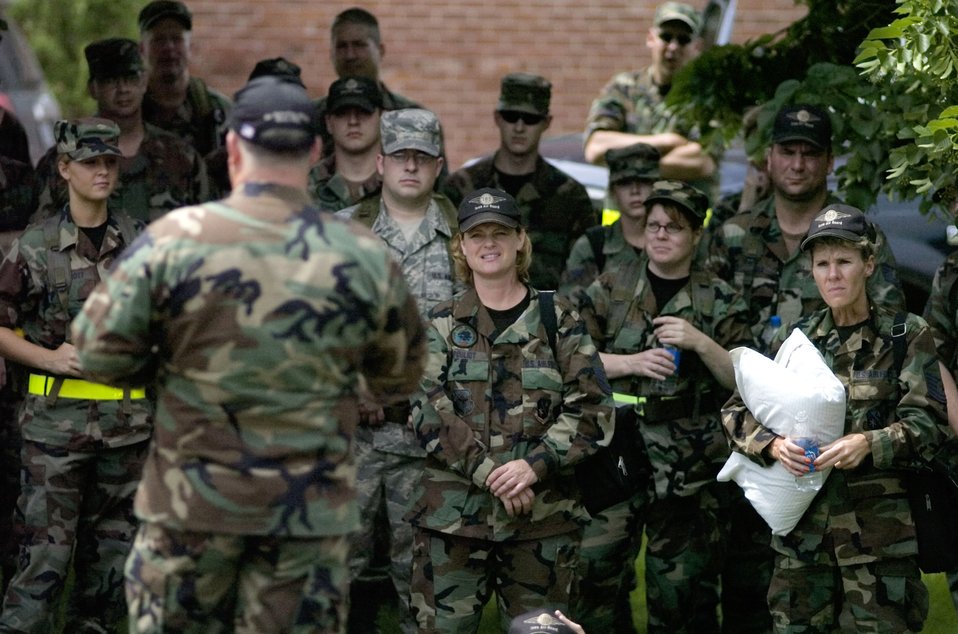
Air National Guard shores up as flood recedes

Lt. Col. Joe Ascherl talks to Airmen from the 185th Air Refueling Wing Cedar Rapids, Iowa, June 15. More than 150 Airmen arrived in Cedar Rapids to help secure and recover areas that were affected by flood waters. Colonel Ascherl is the mission support commander for the 185th ARW located in Sioux City, Iowa.